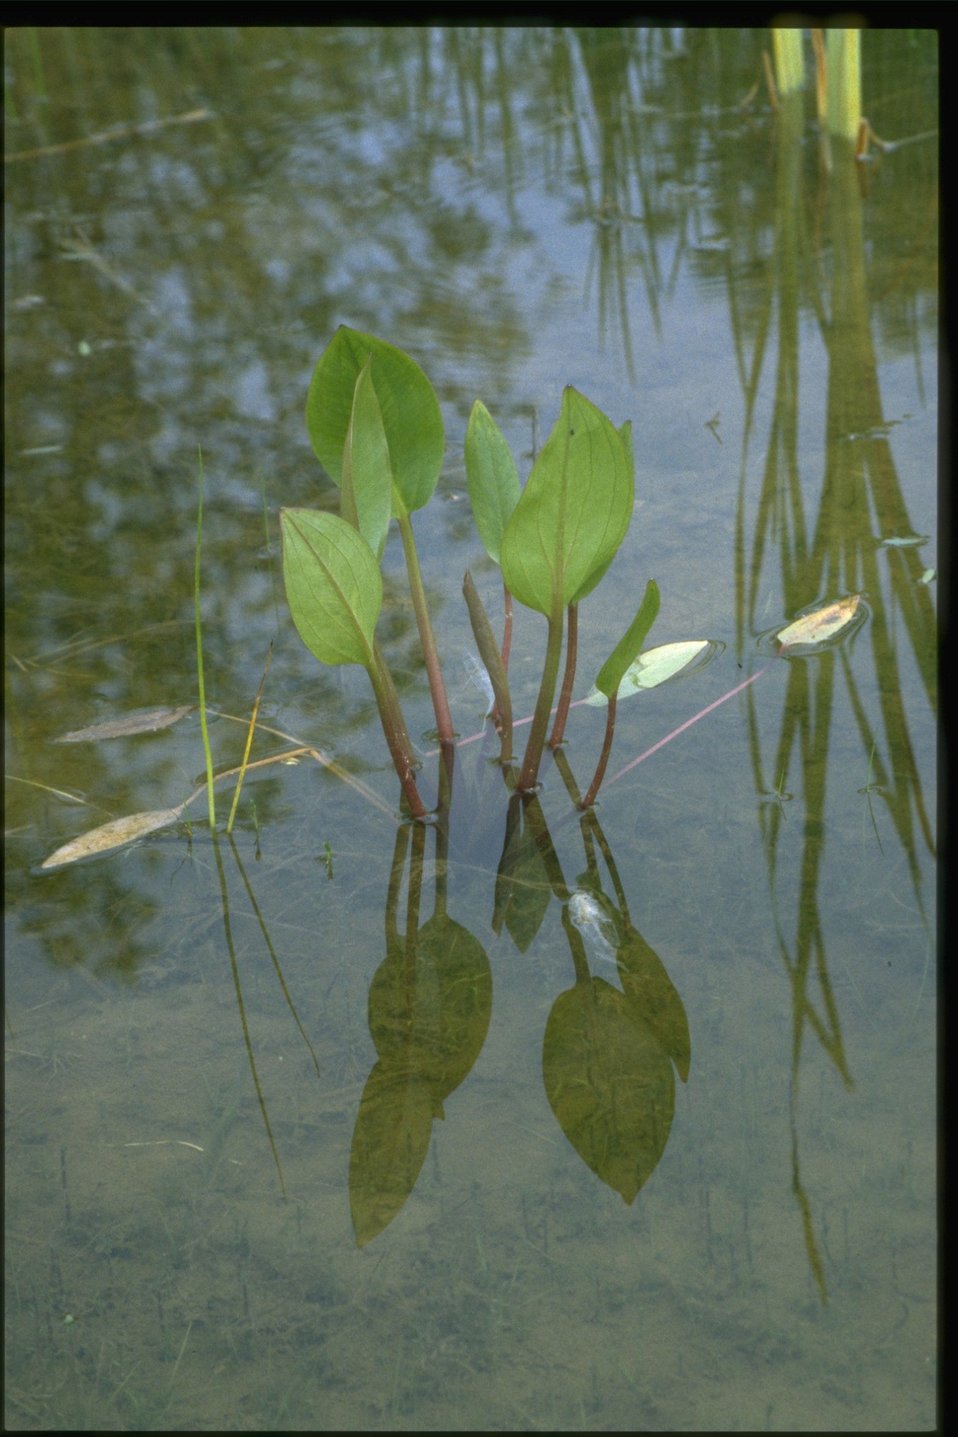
Medium shot of Alisma.